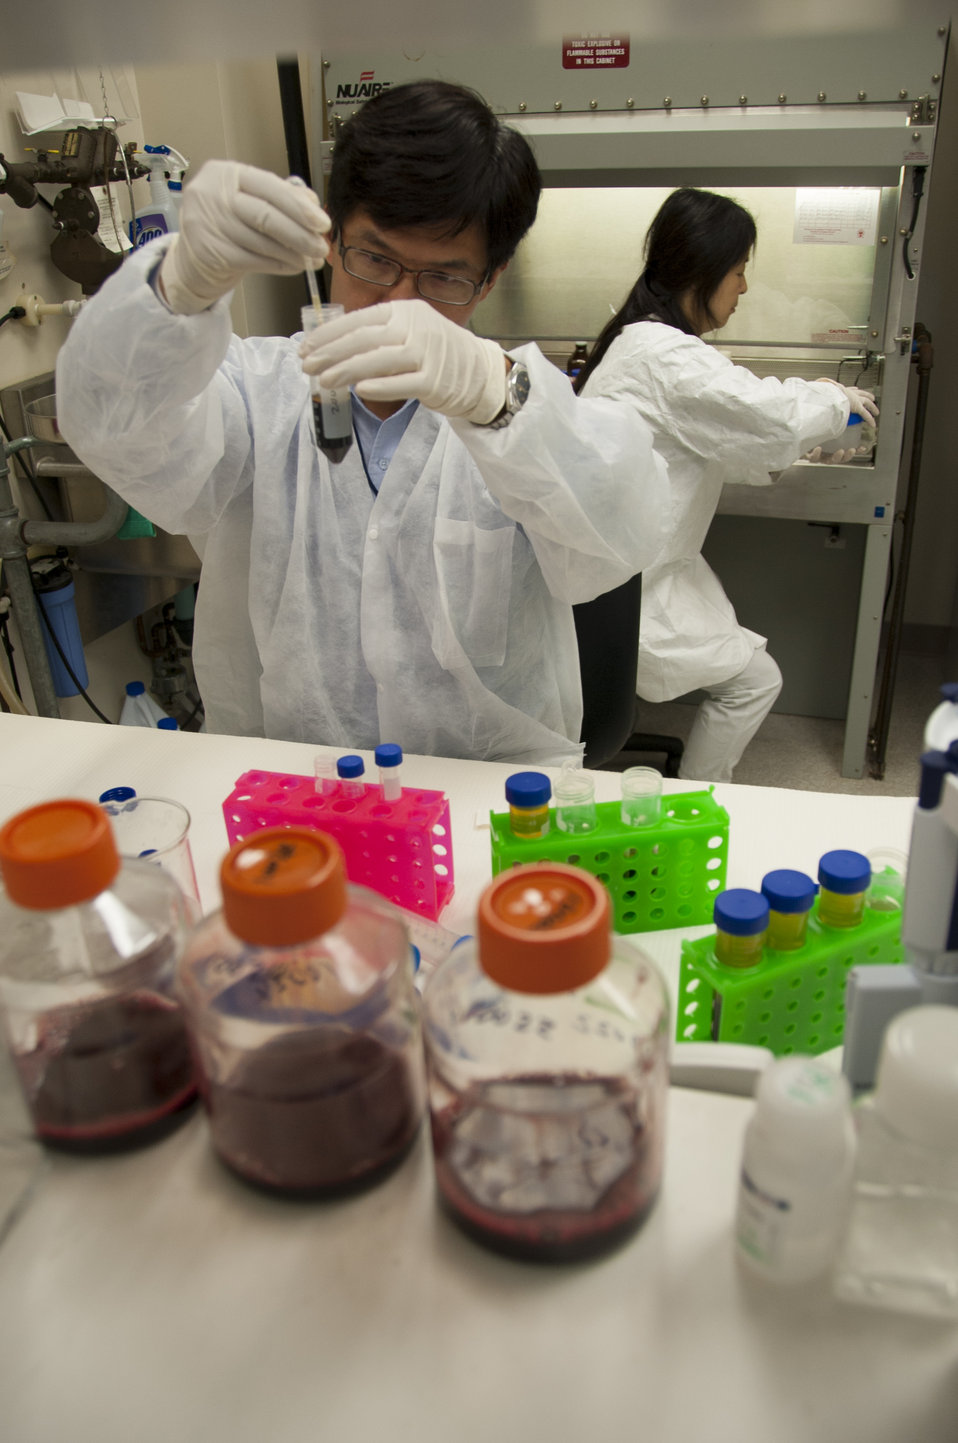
Blood Research: Saving Lives (8513)

Jason Liu, Ph.D., a laboratory chief at FDA’s Office of Blood Research and Review, collects plasma from processed whole blood. Meihong Liu, Ph.D., works in the background. FDA is responsible for the safety of our nation’s blood supply and is at the forefront of evaluating and encouraging innovative technologies for protecting it.

Read this Consumer Update to learn more: Advances in Saving Lives with Blood